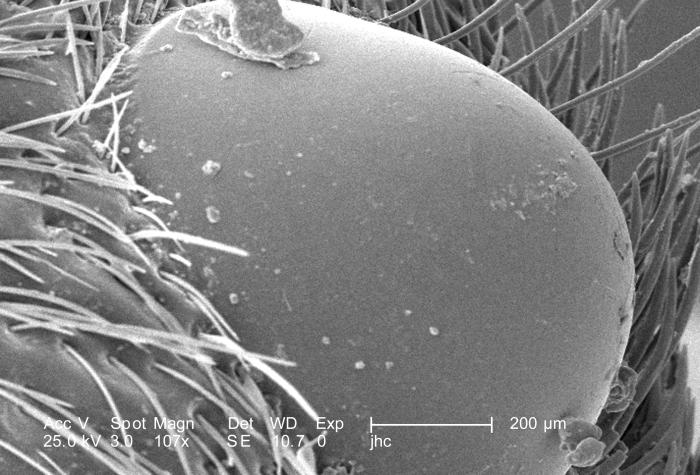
Magnified 107X under a scanning electron micrograph (SEM), this was one of the two eyes of a female velvet ant, Dasymutilla sp., with a number of debris particulates on its surface. Note the 'hairs' surrounding the eye, which are actually chitinous extensions of the exoskeletal surface. In mammals, the hair is composed of another protein known as keratin. The hairs adorning an insect's exoskeleton are known as 'setae', and interestingly, both, these sensorial setae, and its eyes, as well as its antennae all provide the organism with information about its environment, which allows it to act in accordance with its environmental elements.